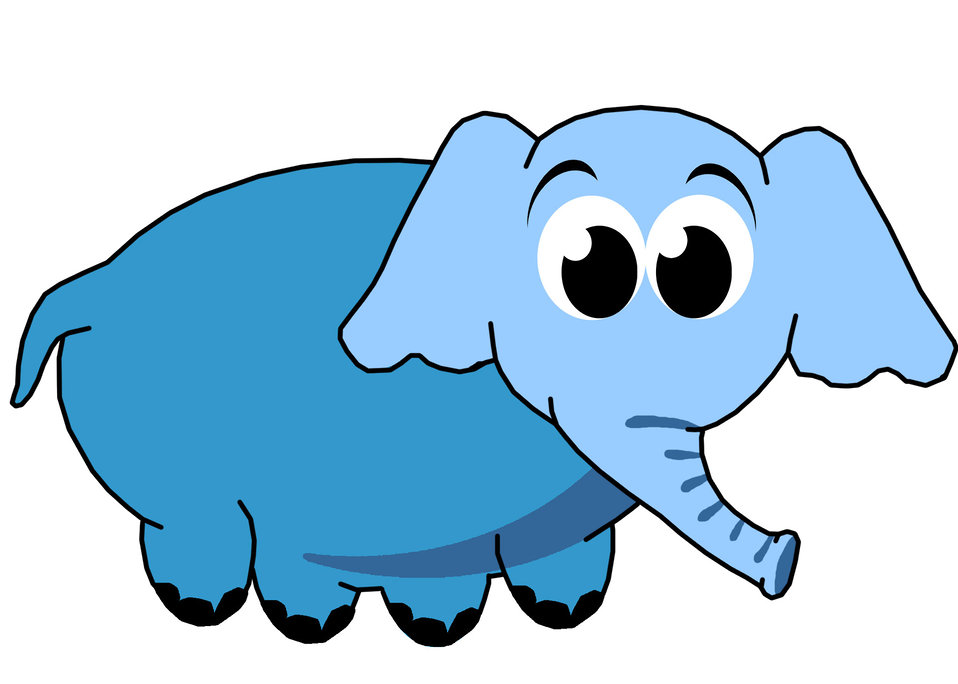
Blue elephant clip art.